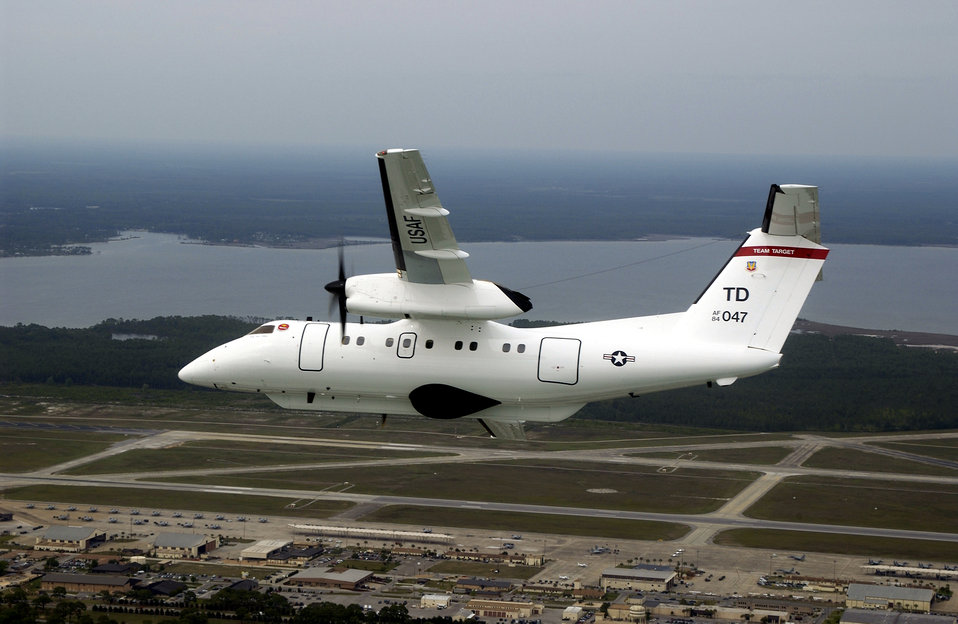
Where did it go

OVER TYNDALL AIR FORCE BASE, Fla. -- An E-9A Widget flies through the sky to relay target telemetry during Combat Archer missions here April 21. The E-9A is assigned to the 82nd Aerial Targets Squadron. This E-9A is one of only two aircraft in the Air Force inventory and is used as an airborne platform and telemetry relay aircraft providing ocean surface surveillance and target telemetry of missiles fired for over the horizon profiles on the Gulf Ranges.